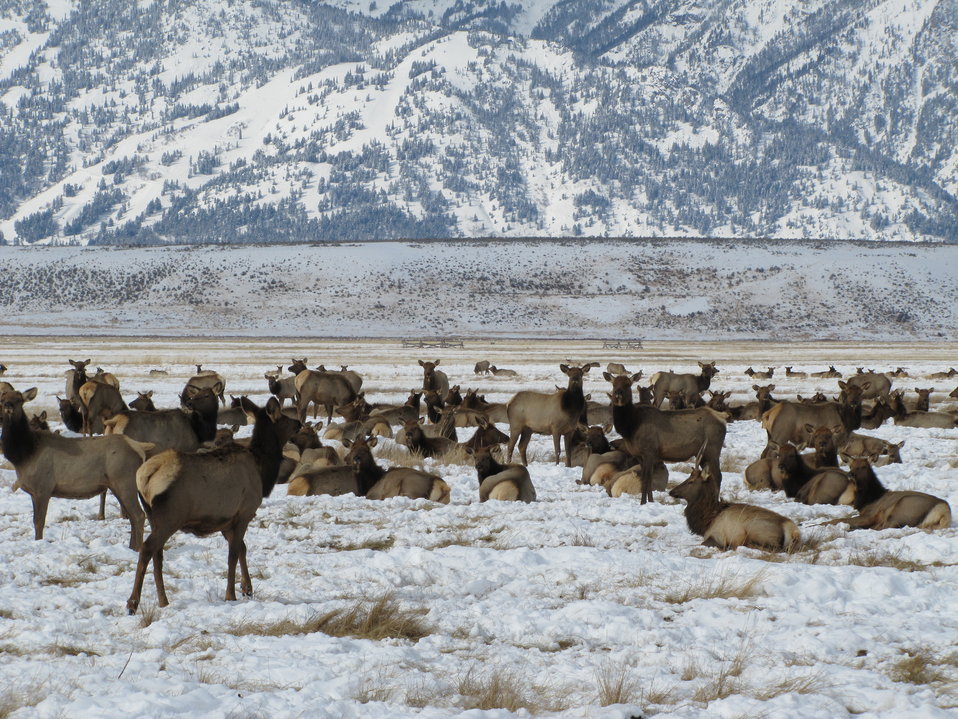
Jackson Elk Herd

Members of the Jackson Elk Herd are seen here wintering on the south end of the National Elk Refuge in Wyoming.